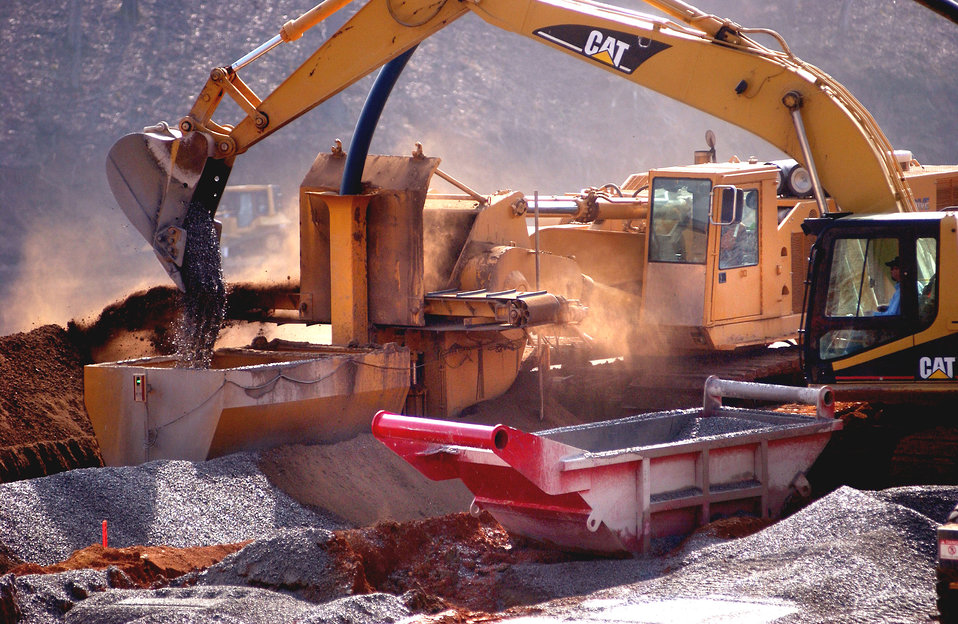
Solid Waste Storage Area (SWSA)

04-019-36 DOE photo by Lynn Freeny

Solid Waste Storage Area (SWSA) Trench Digger Oak Ridge Tennessee 2-4-2004